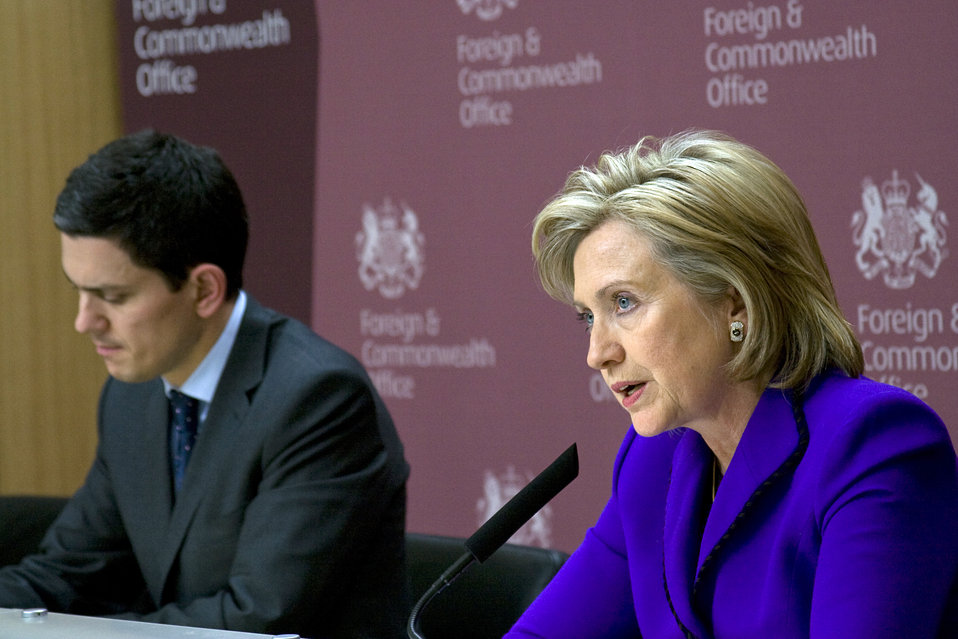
Secretary Clinton and Foreign Minister David Miliband

U.S. Secretary of State Hillary Rodham Clinton and British Foreign Minister David Miliband at the joint press availability following the meeting on Yemen in London, January 27, 2010.